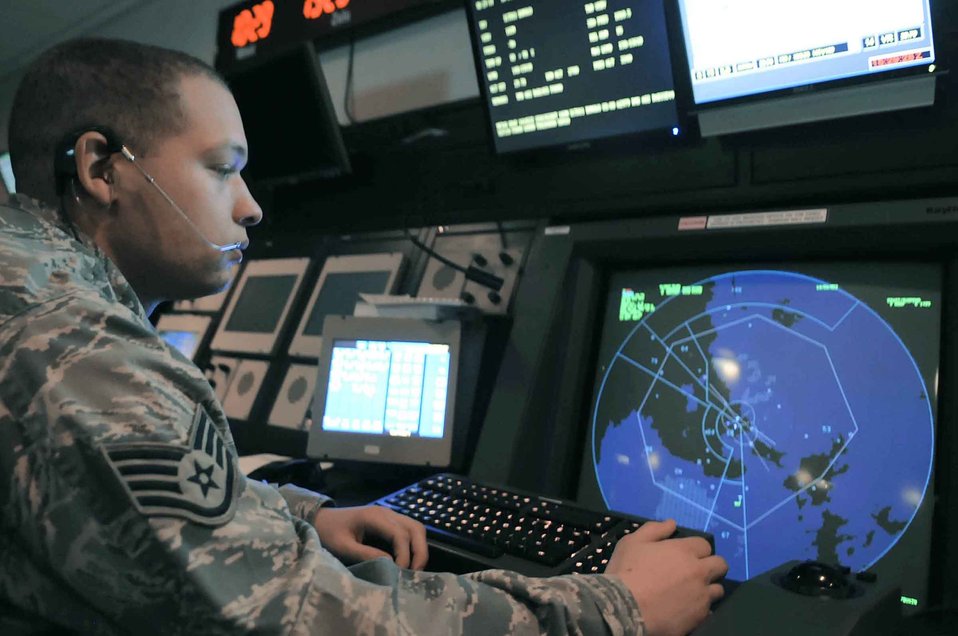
Ellsworth officials launch digital airport surveillance radar

Staff Sgt. Jacob Martin views a radar scope Oct. 14, 2009, at Ellsworth Air Force Base, S.D. The base recently switched from airport surveillance radar to digital airport surveillance radar. Sergeant Martin is a 28th Operations Support Squadron air traffic controller.